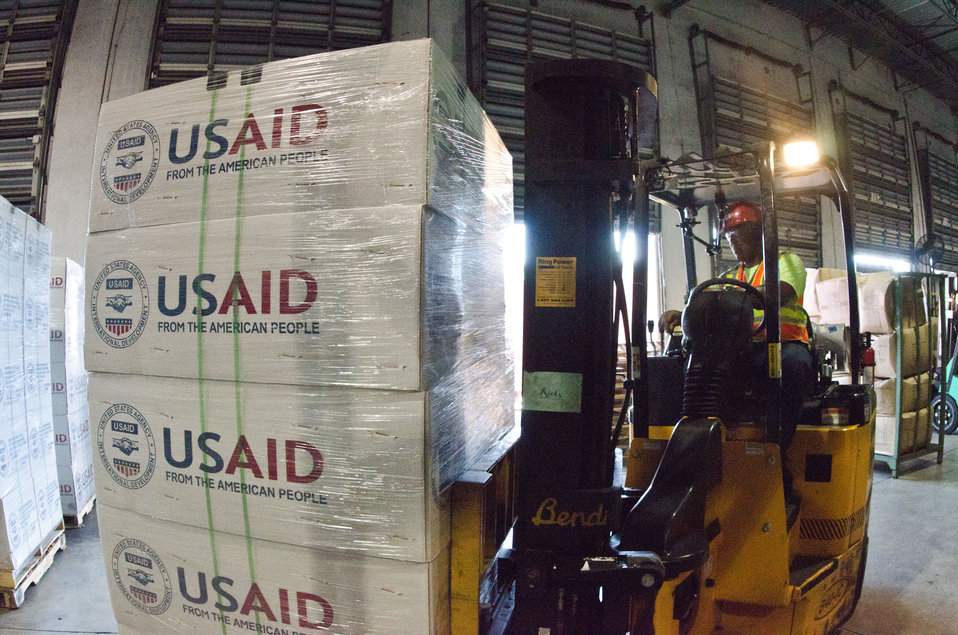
Crowley Logistics in Miami, FL on Friday, August 26, 2011 is one of three U.S. Agency for International Development (USAID) shipping and logistics facilities in the nation. In times of emergency humanitarian relief aid, they can respond with supplies delivered to aircraft at Miami International Airport within two hours. They utilize articulating forklifts, which hinge in the middle to store and retrieve pallets of supplies through narrow aisle ways. This allows for a higher density of stored supplies in the warehouse. Pallets of supplies are stacked three levels high. USAID provides humanitarian assistance through the Office of U.S. Foreign Disaster Assistance (OFDA). OFDA is the lead U.S. Government (USG) office charged with providing and coordinating USG humanitarian assistance in response to international emergencies and disasters. To achieve this, USAID works in cooperation with other USG offices such as the U.S. Department of Agriculture (USDA), and international humanitarian experts. The USDA provides food assistance to support emergency feeding programs in countries experiencing food shortages due to drought and civil conflict.